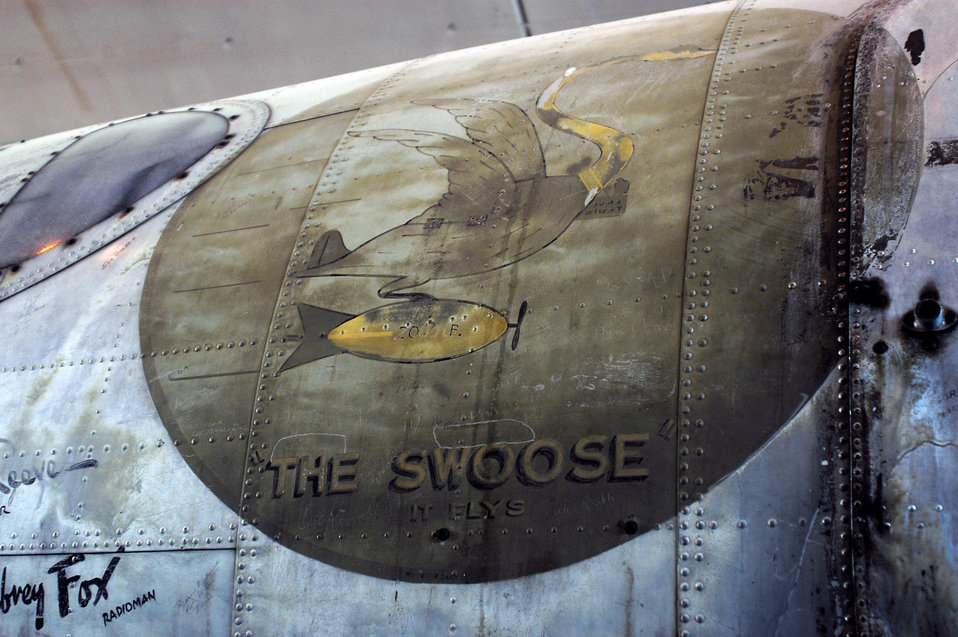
'The Swoose' finds new home at National Museum of the U.S. Air Force

Artwork depicting